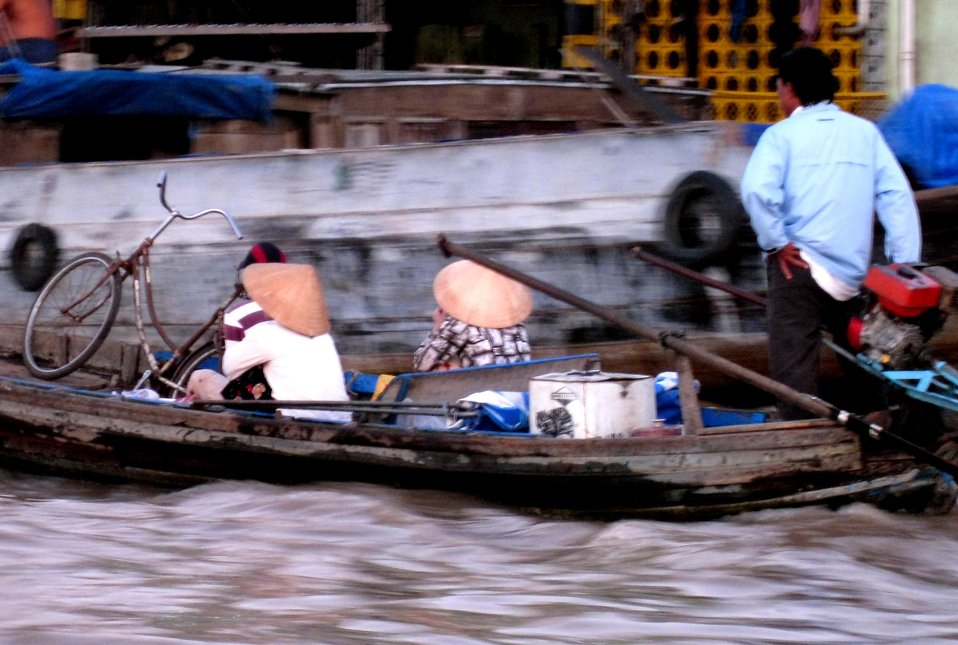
Bumpy waters on Vietnam's Mekong Delta

USAID provides training and support to poultry farmers to stem the spread of avian influenza.